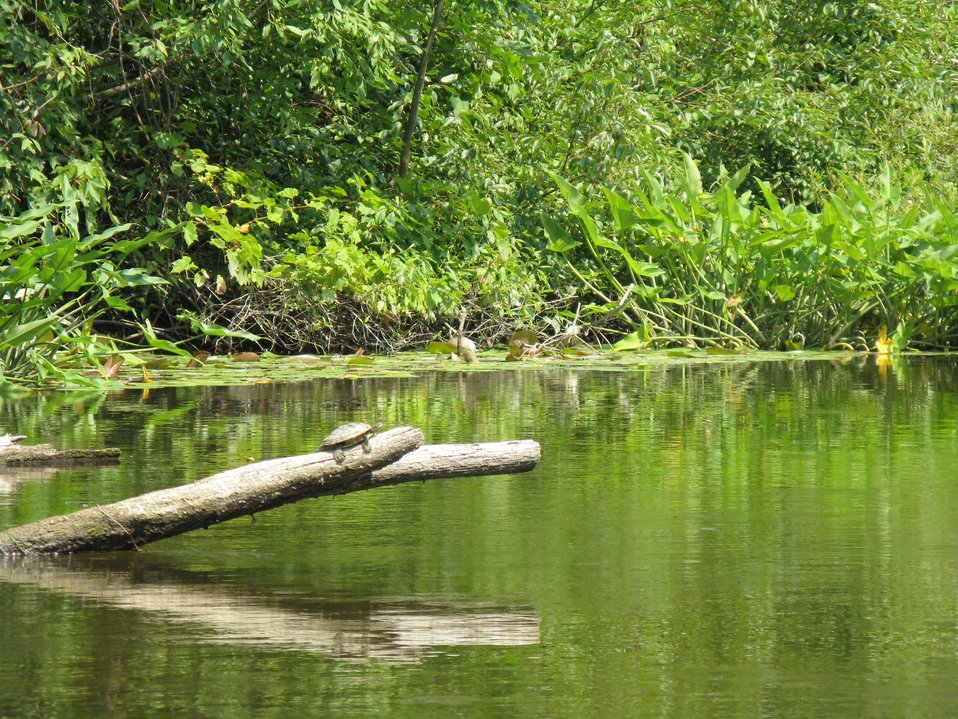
Turtle